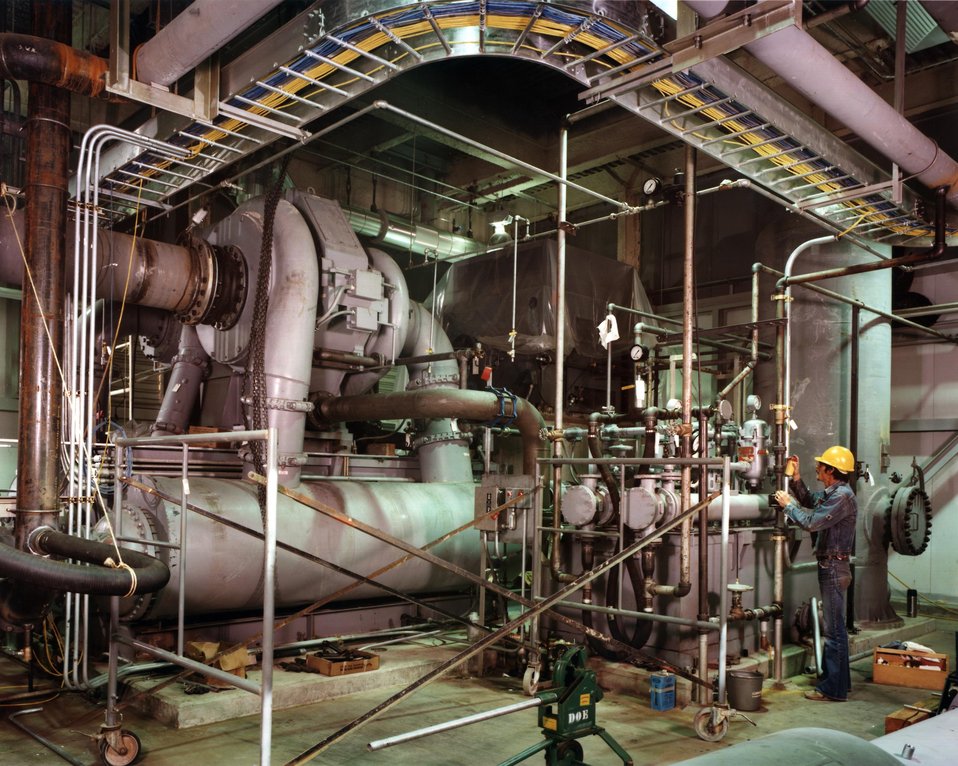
THE COMBUSTION AIR COMPRESSOR IS DESIGNED TO YIELD 22,500 CFM OF PROCESS AIR TO THE ASH INJECTOR COMBUSTOR.

FUTURE METALLIC AIR HEATER) AT ABOUT 250 DEGREES F. AND 200 PSI. IT IS A FOUR STAGE CENTRIFUGAL COMPRESSOR AND IS POWERED BY A 5,500 HP ELECTRIC MOTOR. ON THE WEST SIDE OF THE COMPRESSOR IS A LUBE OIL SYSTEM THAT PROVIDES AND CONTROLS A FLOW OF LUBRICANT TO THE COMPRESSOR.